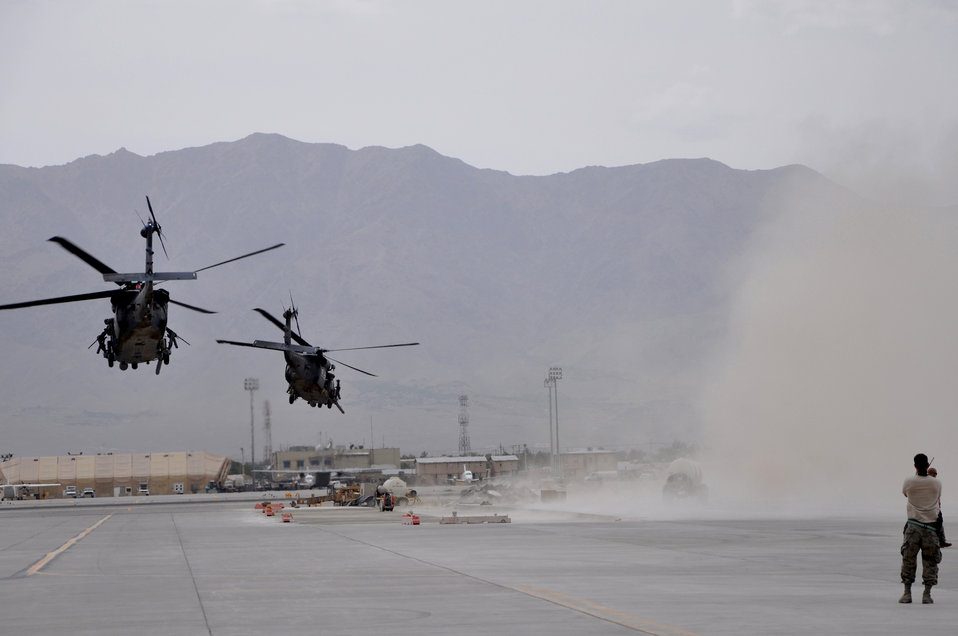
Pave Hawk rescue mission

Two HH-60G Pave Hawk helicopters take off June 11, 2011, from Bagram Airfield, Afghanistan.